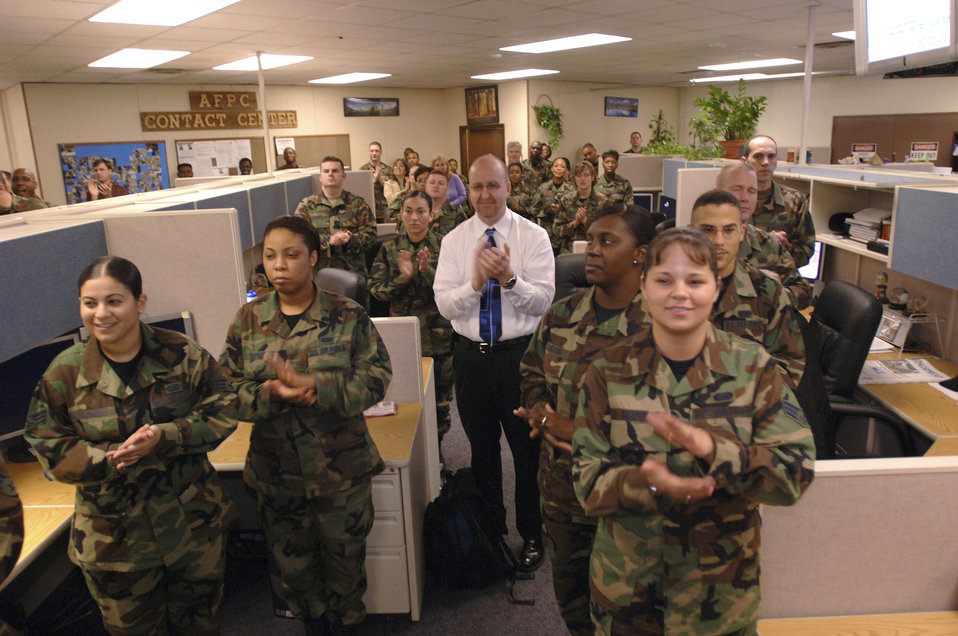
Personnel Services Delivery System initiative begins

Airmen and civilians working at the Air Force Personnel Center's contact center applaud the operational beginning of the new Personnel Service Delivery System on Friday, March 31, 2006, at Randolph Air Force Base, Texas.